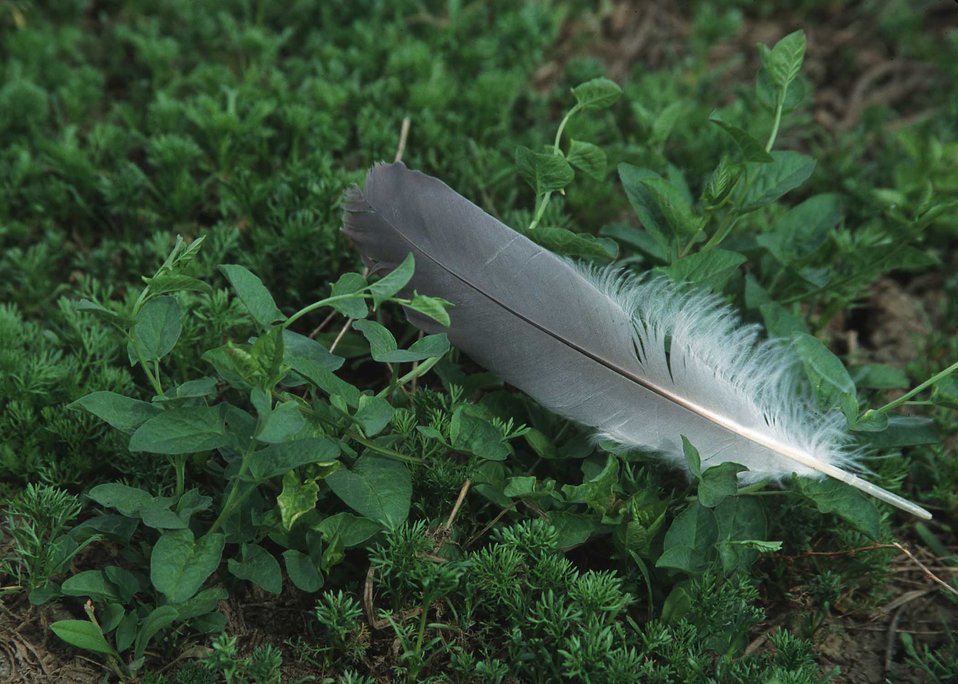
Bird feather.